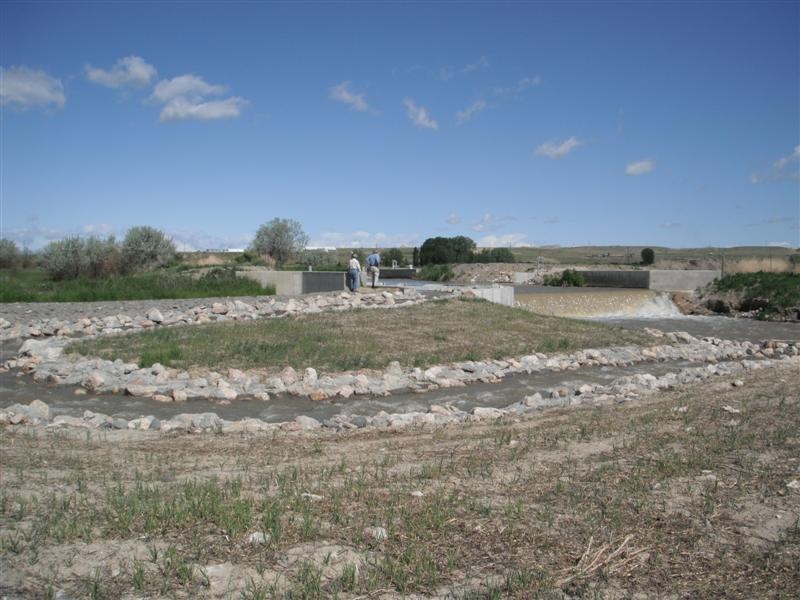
Darrell Mumm Fishway in Wyoming

The Darrell Mumm Fishway on Bitter Creek, a tributary of the Shoshone River, was completed in June 2011. It allows upstream passage of several native and nonnative fish species.